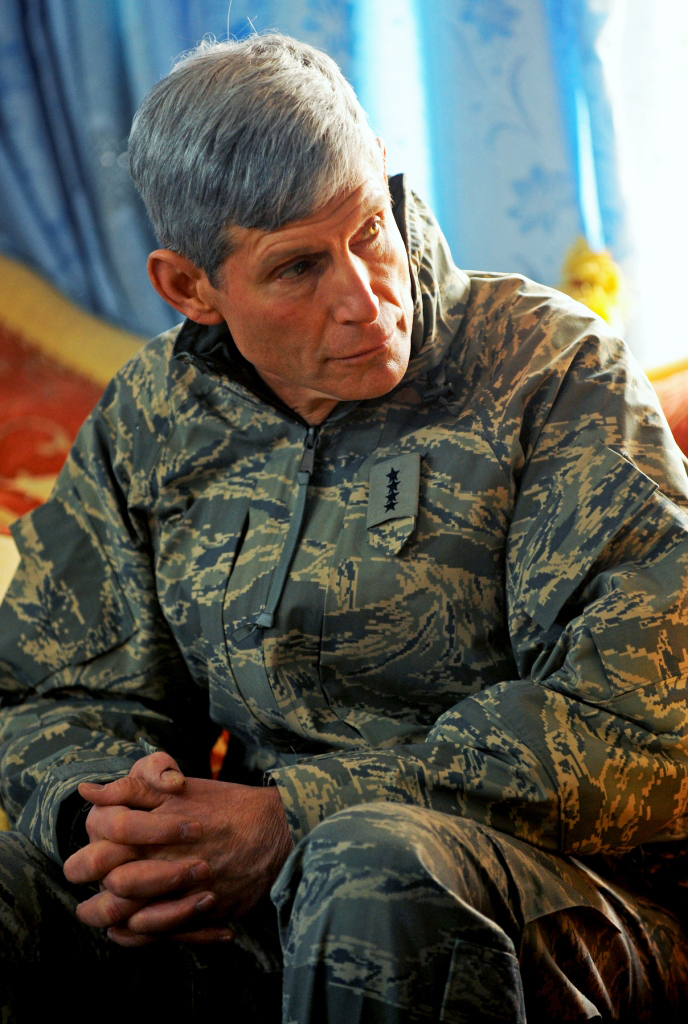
Air Force Chief of Staff Gen. Norton Schwartz listens as Ashraf Naseri, the Zabul provincial governor, talks about the relationship between the local government and Provincial Reconstruction Team Zabul Jan. 20, 2011, during a visit to Forward Operating Base Smart, Afghanistan. The visit was part of the general's trip to the U.S. Central Command area of responsibility.